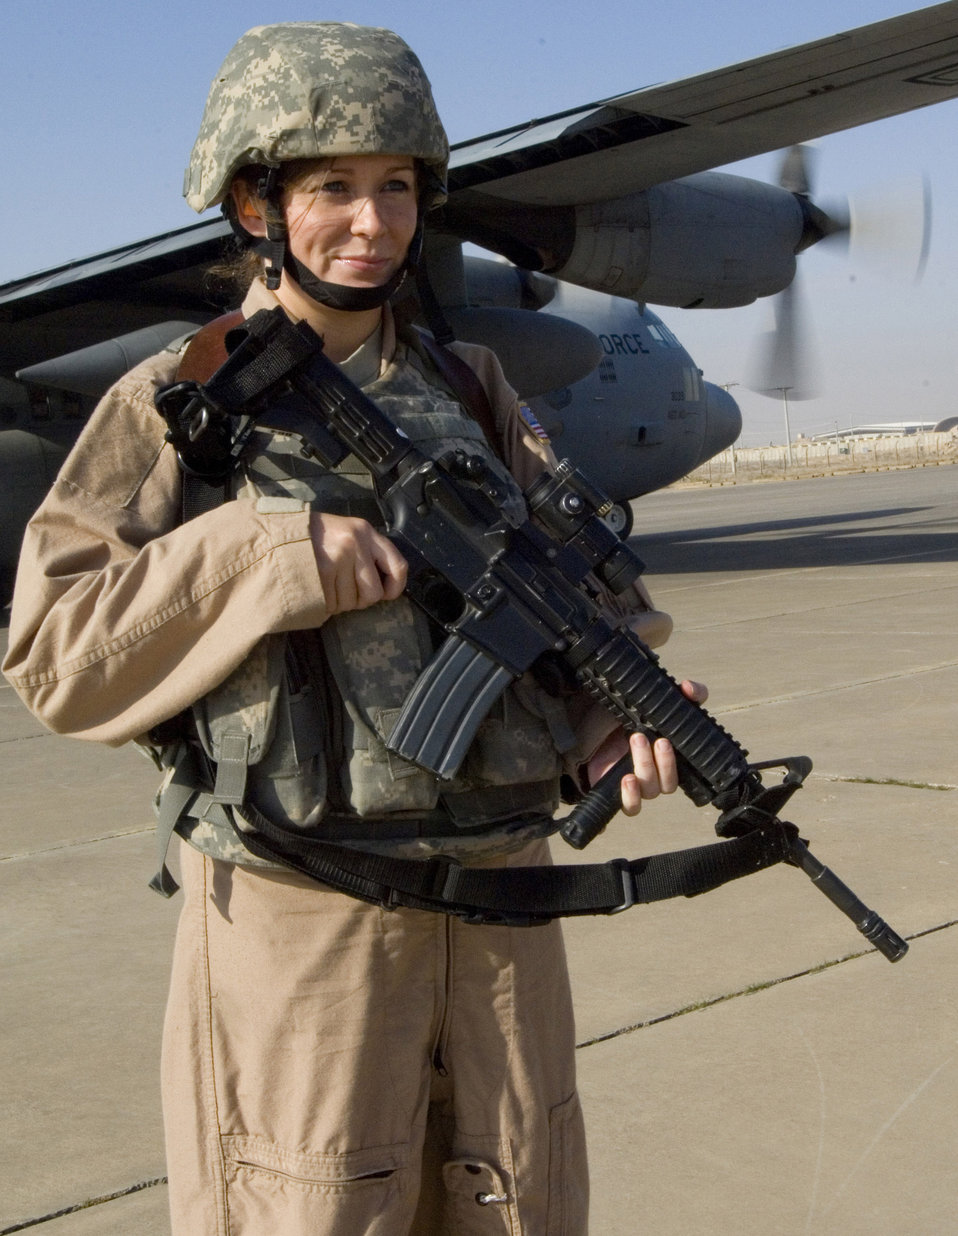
Airmen provide FAST coverage

Senior Airman Michelle Kendall scans the area while providing ground security for a 777th Expeditionary Airlift Squadron C-130 Hercules Nov. 22 at a remote location in Iraq. Airman Kendall is a member of a 332nd Expeditionary Security Forces Squadron Fly Away Security Team. She is deployed from Andrews Air Force Base, Md., and her hometown is Houston, Pa.